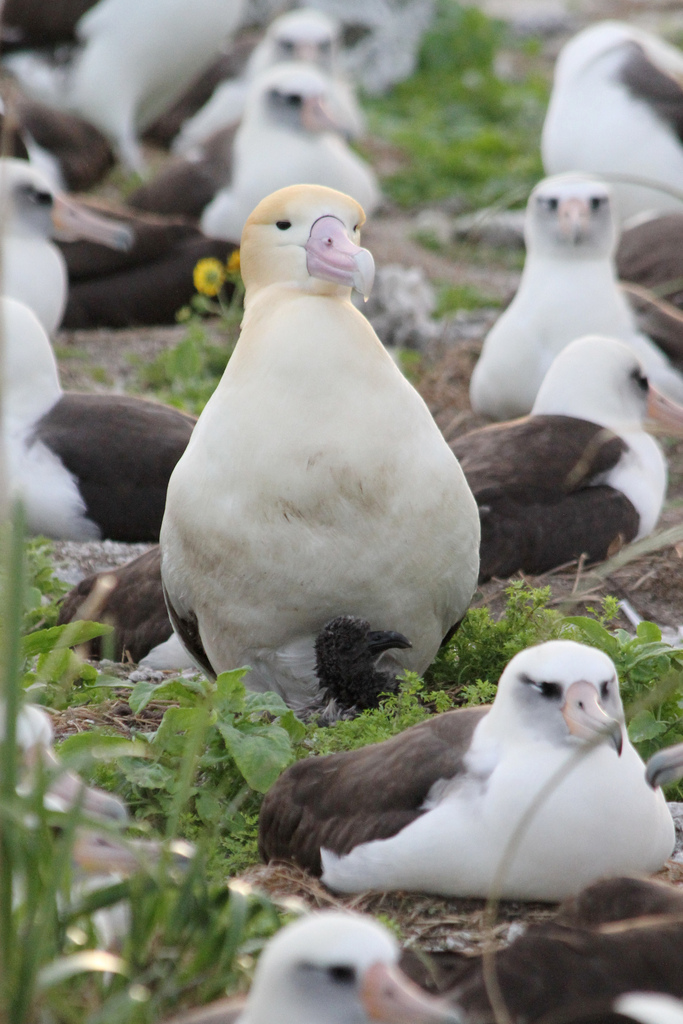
male short-tailed albatross with its chick

This chick, hatched on Jan. 12, 2012, is the second short-tailed albatross ever known to hatch outside Japan. Its parents successfully fledged a chick on Midway in 2011.
Midway Atoll National Wildlife Refuge,
Papahānaumokuākea Marine National Monument
January 2012